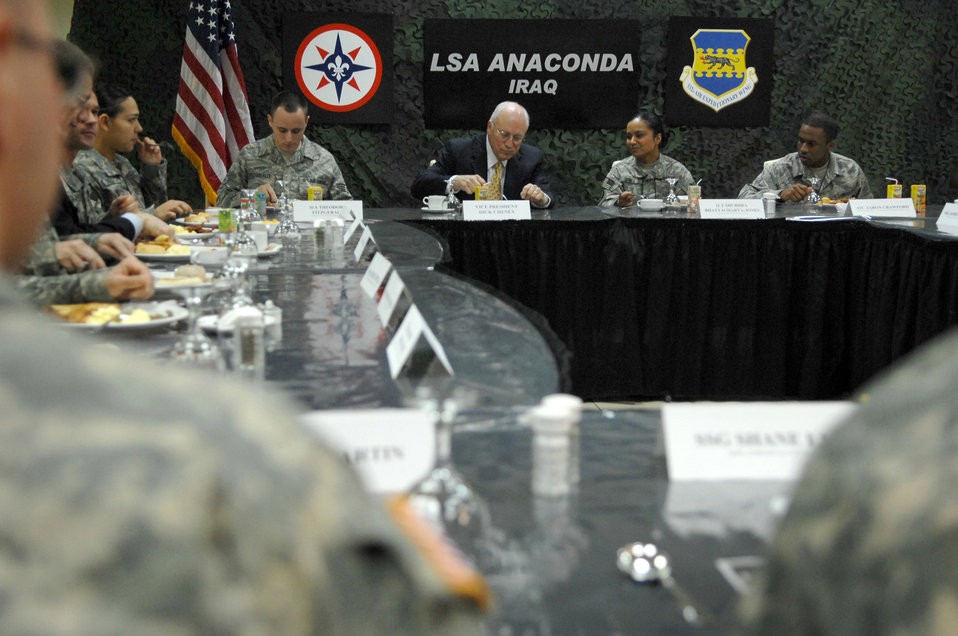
Vice president visits troops at Balad

Vice President Dick Cheney meets a select group of Airmen, Soldiers and Sailors for breakfast March 18 at Balad Air Base, Iraq. The vice president came to the base to visit deployed servicemembers in support of Operation Iraqi Freedom.